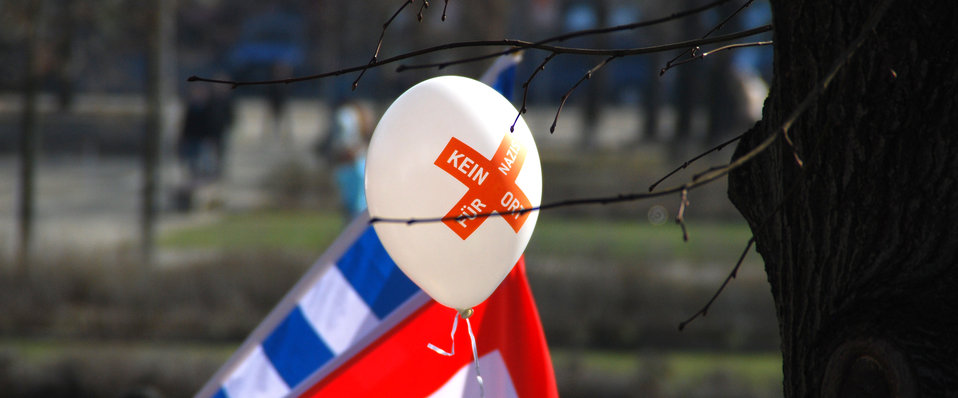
Proteste gegen den Nazi-Aufmarsch am 24.3.2012 in Frankfurt (Oder)